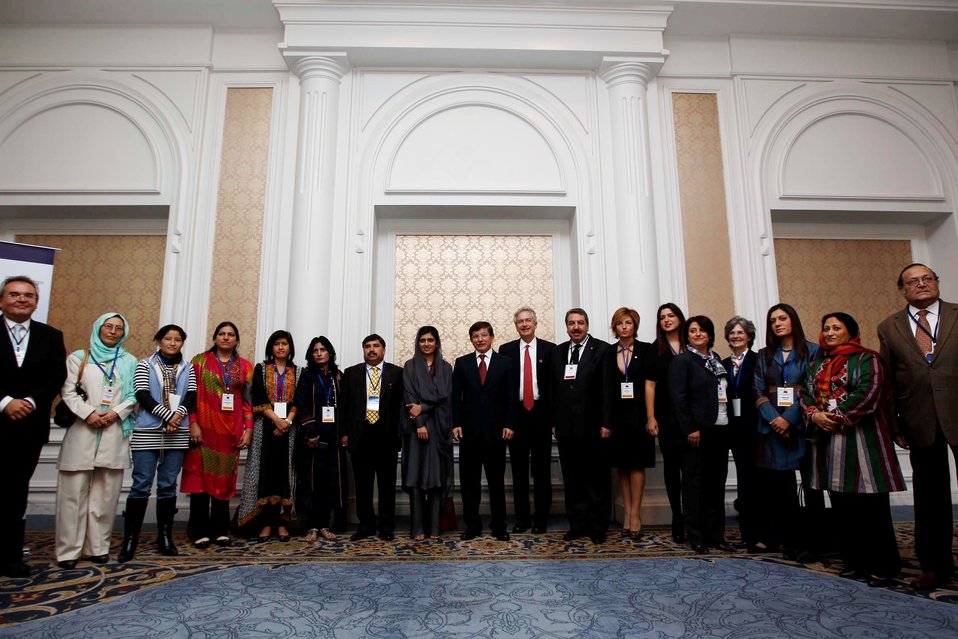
Deputy Secretary Burns and Turkish Foreign Minister Davutoglu Pose for a Photo With Women Entrepreneurship Roundtable Participants

U.S. Deputy Secretary of State William J. Burns and Turkish Minister of Foreign Affairs Ahmet Davutoglu pose for a photo with participants in the Global Entrepreneurship Program's (GEP) Turkey-Afghanistan-Pakistan Women Entrepreneurship Roundtable during the Istanbul Conference for Afghanistan in Istanbul, Turkey, on November 2, 2011.